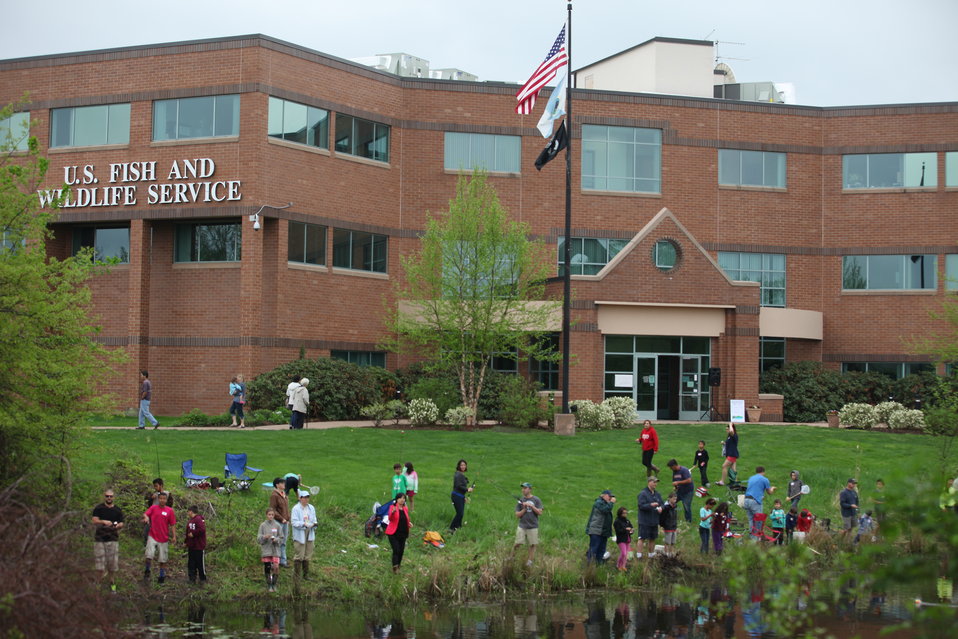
Fishing Derby